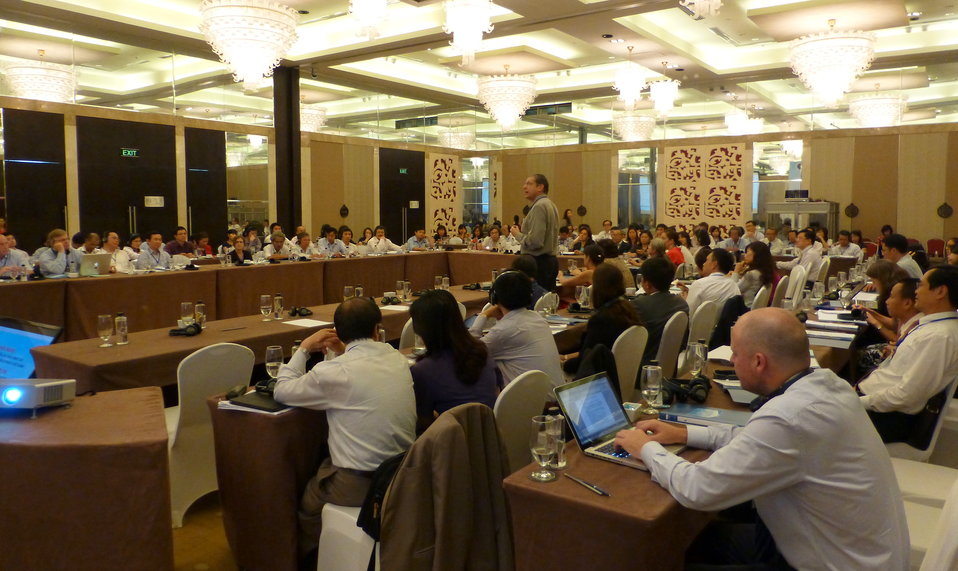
Conference on Resource Mobilization for Influenza A (H7N9) Prevention, Control and Preparedness in Vietnam

Hanoi, May 6, 2013
Supported by USAID Vietnam